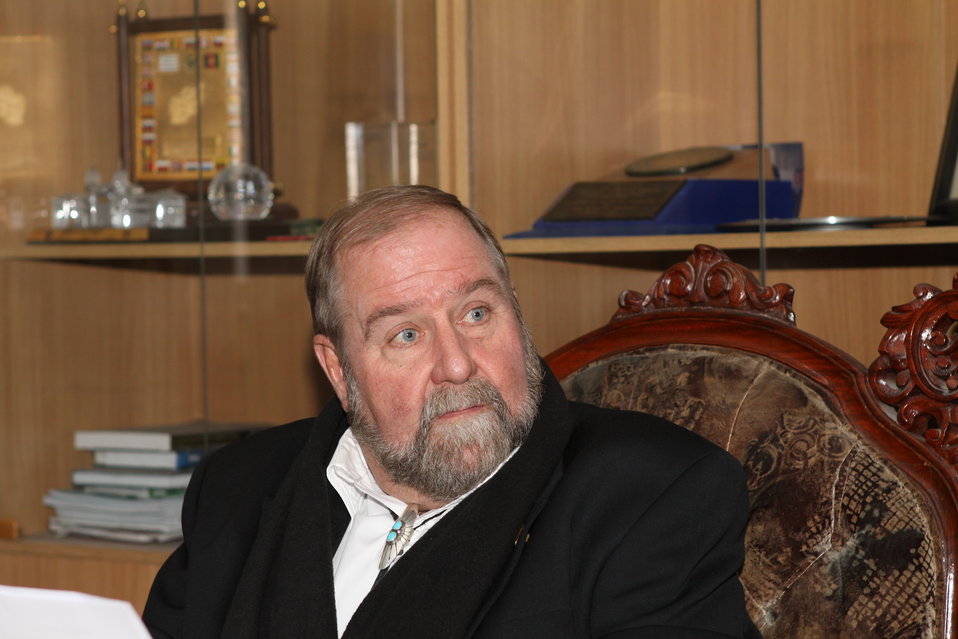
Community Health Workers Celebrated

Kabul, Afghanistan | December 5, 2010 — In support of the United Nations designated International Volunteer Day for Economic and Social Development, Afghanistan’s Ministry of Public Health celebrated its annual Community Health Worker Day today. Acting Minister of Public Health Dr. Suraya Dalil, USAID Senior Deputy Mission Director Robert Hellyer, other government officials, and international donors joined in recognizing the critical contribution of community health workers in Afghanistan and encouraging them to continue their voluntary support to their communities.
The event praised the contributions of the more than 22,000 volunteers throughout the country who deliver community level health-education, counseling, and services out of village health posts located in private homes. The Ministry of Public Health envisioned that community-based healthcare programs will actively encourage communities and families to adopt healthy lifestyles and behaviors, and provide families access to high quality and socially acceptable preventative medicine and life-saving services.
“We have 22,000 community health workers in Afghanistan that are able to implement the basic and standard medicines. They all have been trained through a job description,” said Minister Dalil. Addressing the health workers, she added, “I am proud and feel powerful that I have people like you.”
USAID-funded health projects collaborate closely with the Ministry of Public Health to improve the health and nutritional status of Afghans, provide quality primary healthcare, and promote healthy behaviors at the community and household-levels. USAID supported the training of more than 9,000 of the volunteer community health workers currently working in Afghanistan.
“On behalf of the American people, I congratulate the Community Health Workers for their diligence to gain the skills and knowledge necessary to serve their communities in this important role,” said USAID Senior Deputy Mission Director Hellyer. “USAID strongly supports community based health care and believes that quality community-based health services are essential to reaching Afghanistan’s Millennium Development Goals.”
To support the Basic Package of Health Services, USAID assisted in developing the community health worker training manual, helped train community health worker supervisors and master-trainers, facilitated in-service training, and produced and developed reporting tools, job aids, and education materials.